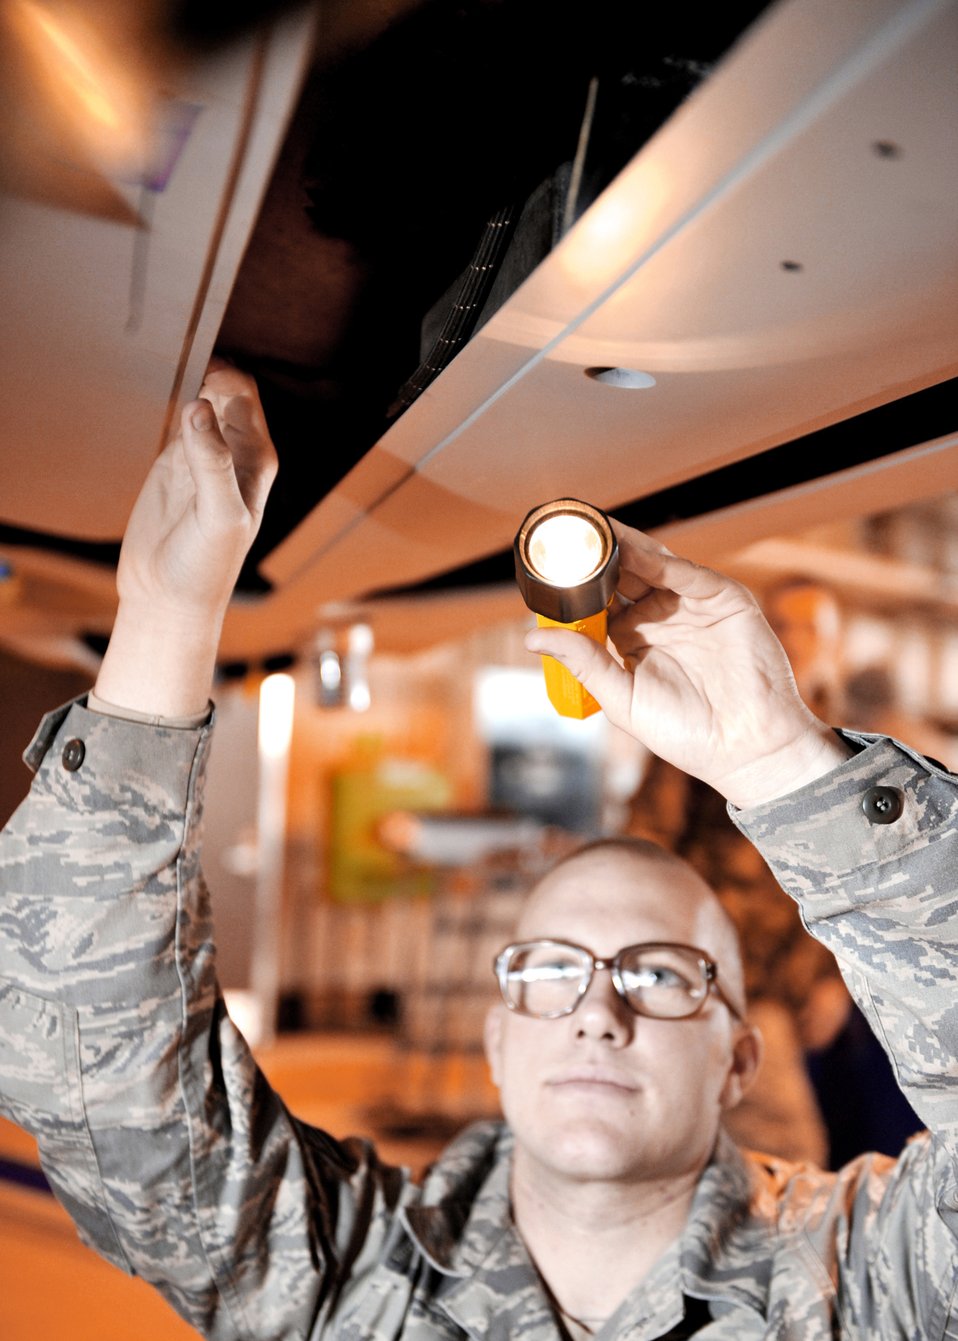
849th AMXS provides eyes in the sky of Haiti

Staff Sgt. Cliff Ferrero prepares to disassemble the wing of an MQ-1 Predator Jan. 17, 2010, at Holloman Air Force Base, N.M. Sergeant Ferrero is a crew chief assigned to the 849th Aircraft Maintenance Squadron.